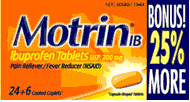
RECALLED - Motrin IB Coated Tablets and Motrin IB Coated Caplets

December 21, 2011 - McNeil Recall of Motrin IB Tablets and Caplets.